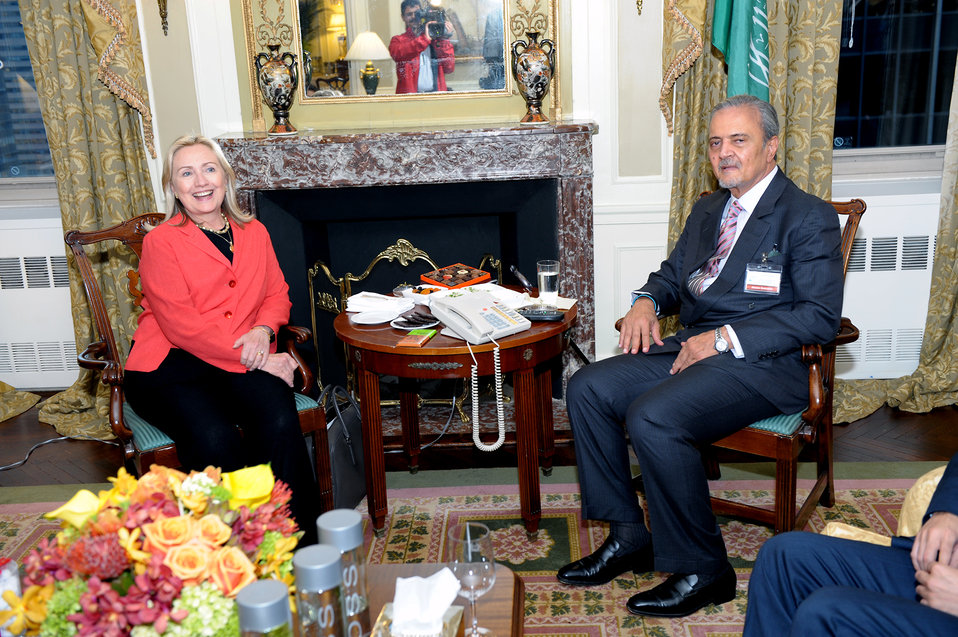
Secretary Clinton Participates Meets With Saudi Foreign Minister Saud al-Faisal

U.S. Secretary of State Hillary Rodham Clinton holds a bilateral meeting with Saudi Foreign Minister Saud al-Faisal at the Waldorf-Astoria in New York, New York, on September 20, 2011.